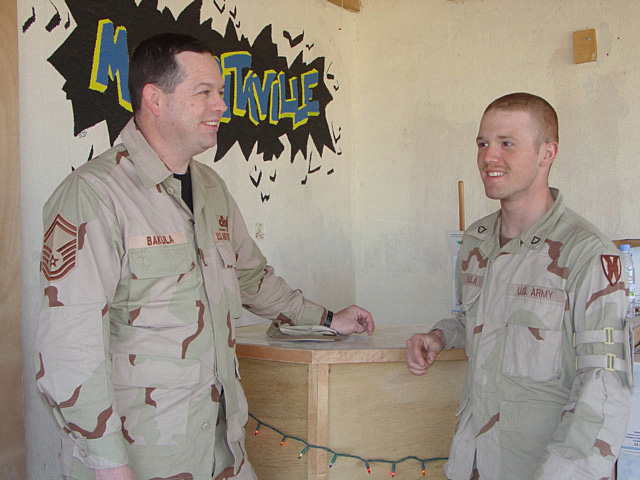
Two generations, one similar mission

TALLIL AIR BASE, Iraq -- Senior Master Sgt. Lawrence Bakula (left) and his son, Army Pfc. James Bakula, reunite here briefly. Sergeant Bakula is the superintendent of the command post, and Private Bakula is deployed with the 66th Transportation Company.